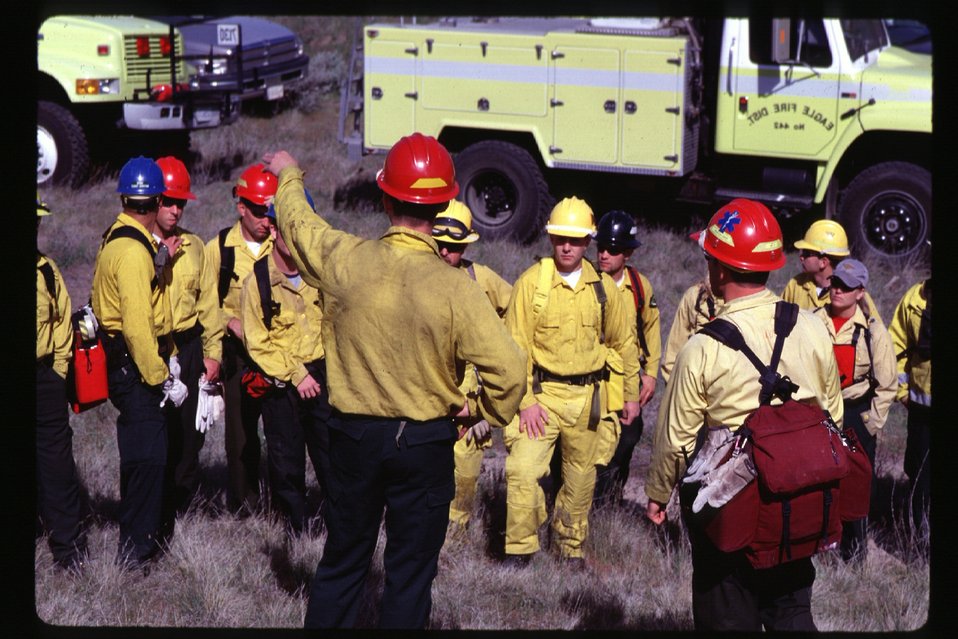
Fire fighter training Four Rivers Field Office LSRD Lower Snake River District